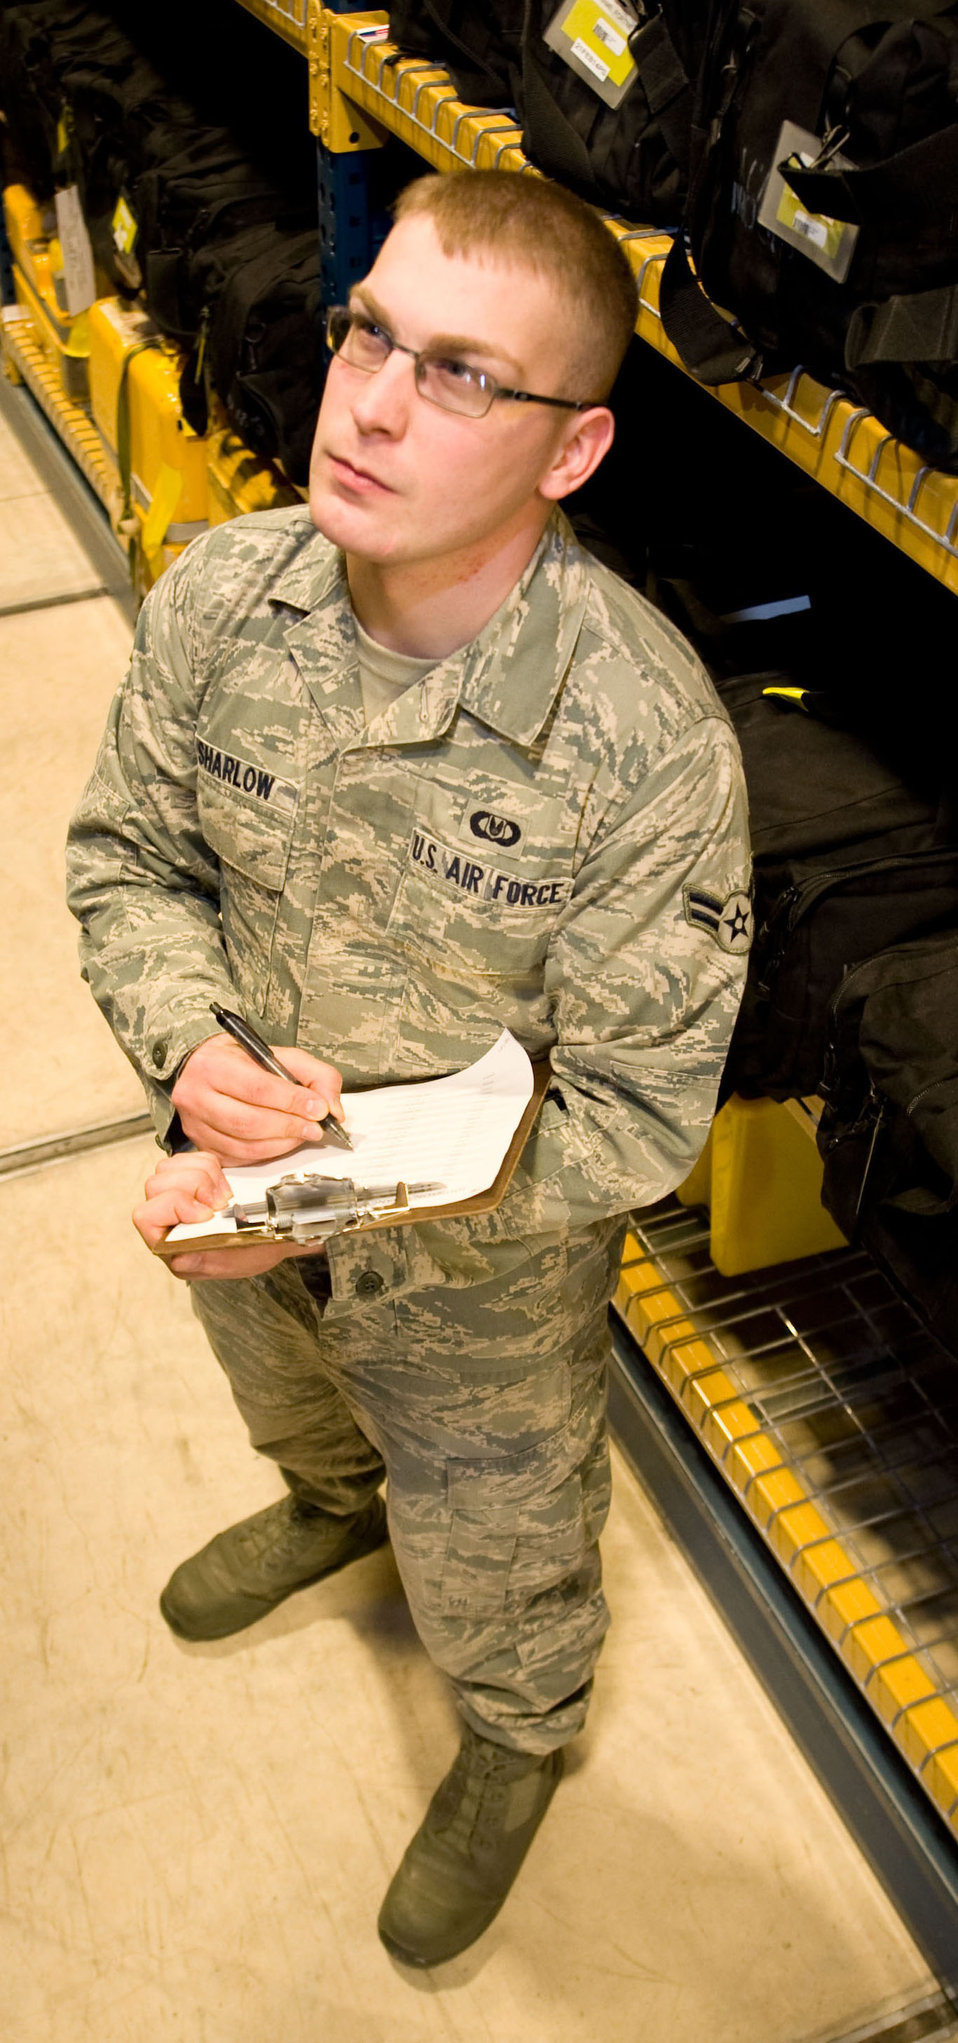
Airman creates important database

Airman 1st Class Chris Sharlow, 436th Operations Support Squadron Aircrew Flight Equipment journeyman, takes an inventory of Aircrew Flight Equipment at Dover AFB, Del. on Nov. 30, 2012. He is the creator of a new computer program used to easily track thousands of accountable aircrew equipment items. Sharlow's program is known as the Flight Equipment Automated Records Systems (FEARS) and is being used to ensure tracking and on-time inspections of items critical to safe, efficient mission accomplishment.